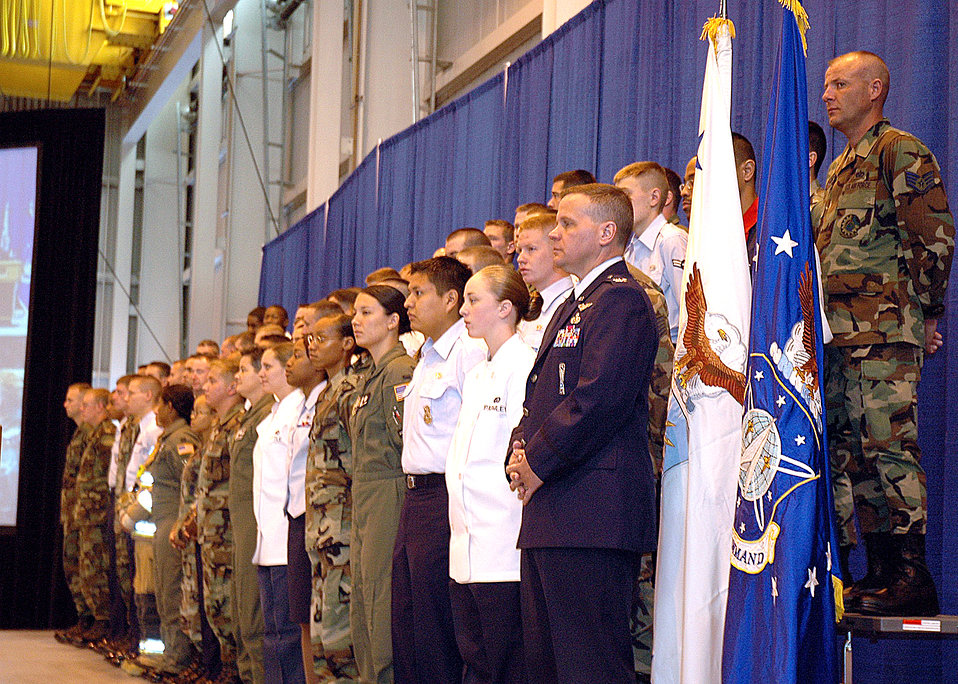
Peacekeeper missile deactivation

F.E. WARREN AIR FORCE BASE, Wyo. -- During its deactivation ceremony Sept. 19, seventy five people here represented the thousands of people who worked with the Peacekeeper missile throughout its 19-year history.